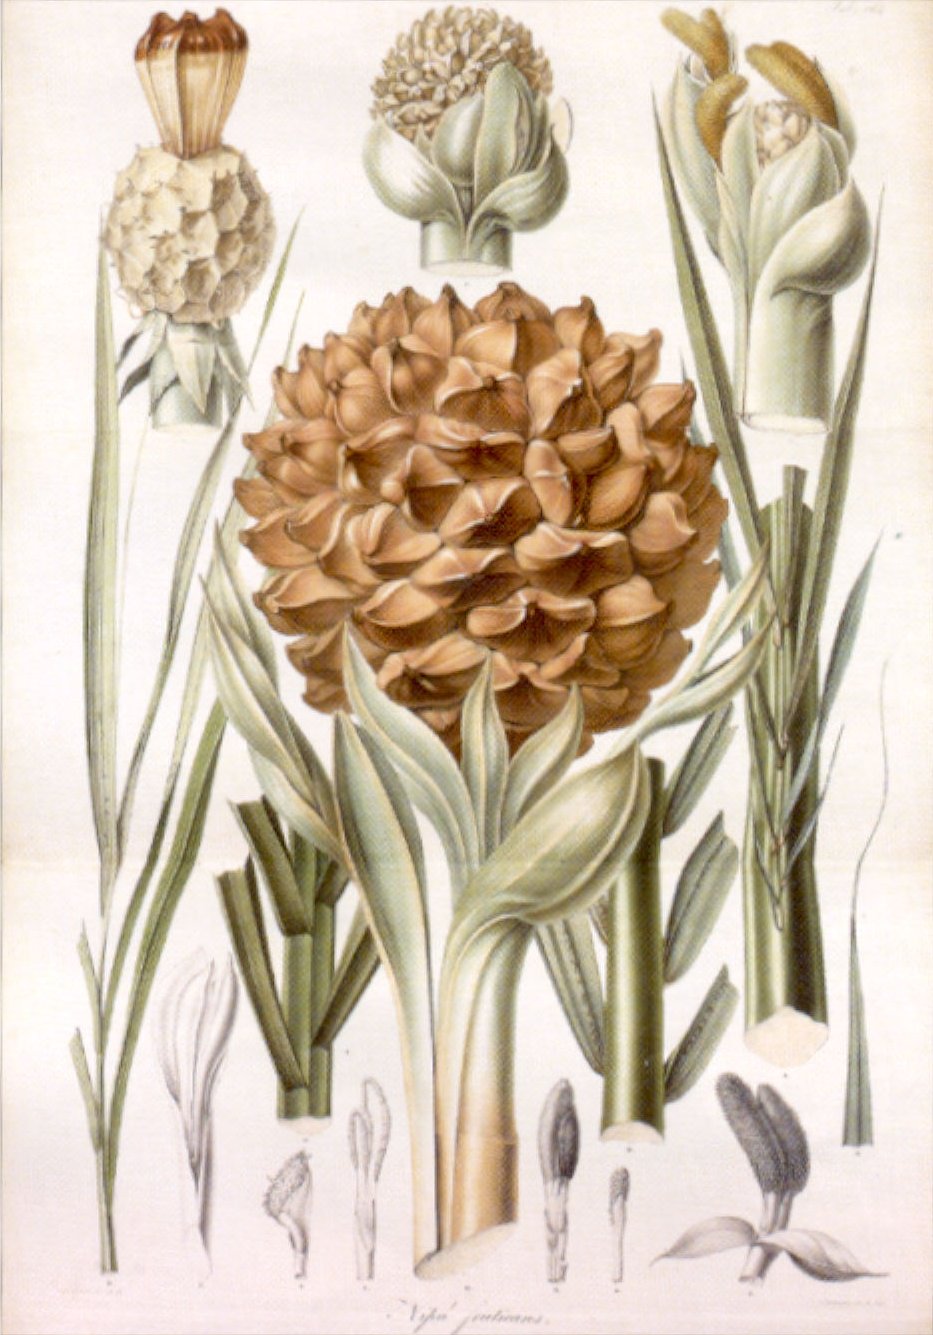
Rumphia, Sive Commentations Botanicae by Carl Ludwig Blume, 1835, Loy McCandless Marks Library